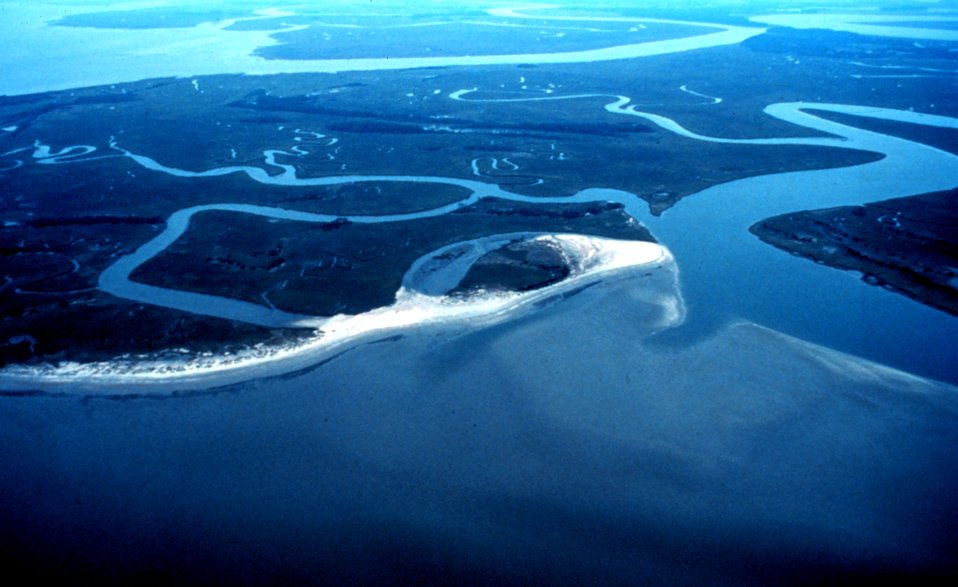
ACE Basin National Estuarine Research Reserve. Otter Island from the air.